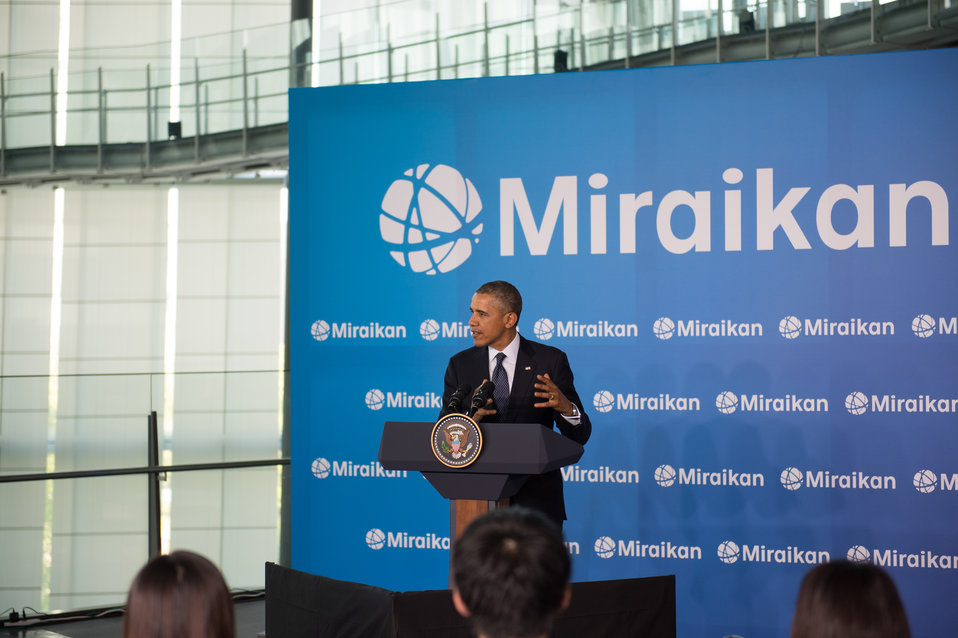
President Obama Delivers Remarks at Miraikan

U.S. President Barack Obama delivers remarks during his visit to the Miraikan (the National Museum of Emerging Science and Innovation) in Tokyo, Japan, on April 24, 2014.